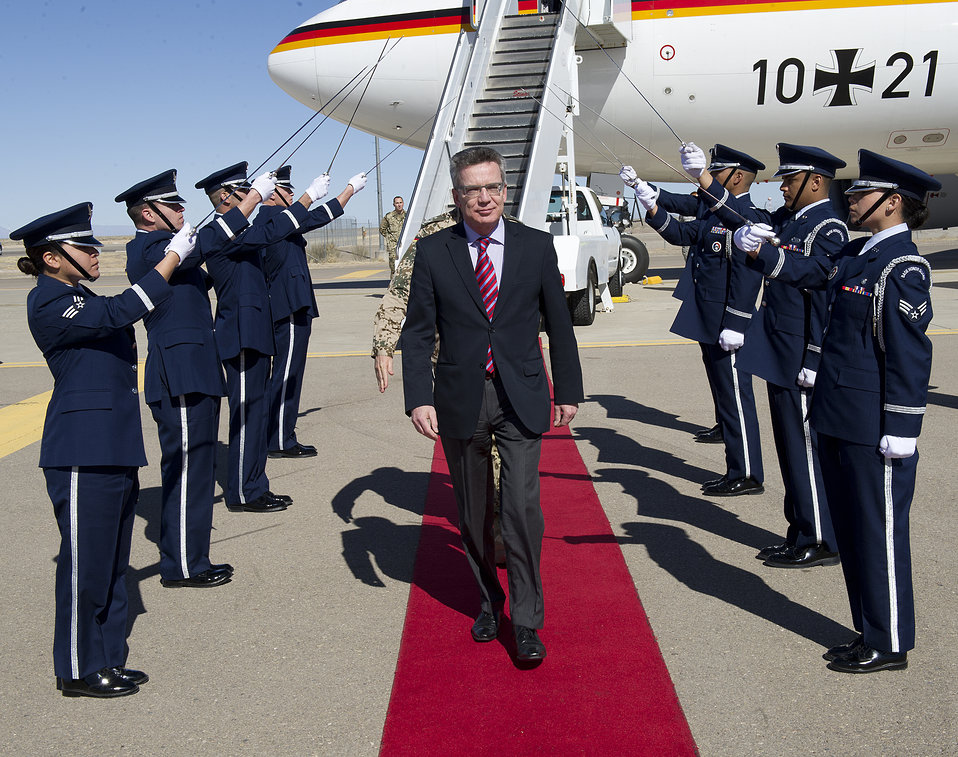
German defense minister visits Holloman AFB

Dr. Thomas de Maiziere, the Germany Federal Minister of Defense, arrives at the 49th Materiel Maintenance Group ramp at Holloman Air Force Base, N.M., Feb. 15, 2012. Holloman AFB was the first of many stops on de Maiziere’s trip to the U.S. He visited the base to visit the German Air Force Flying Training Center.